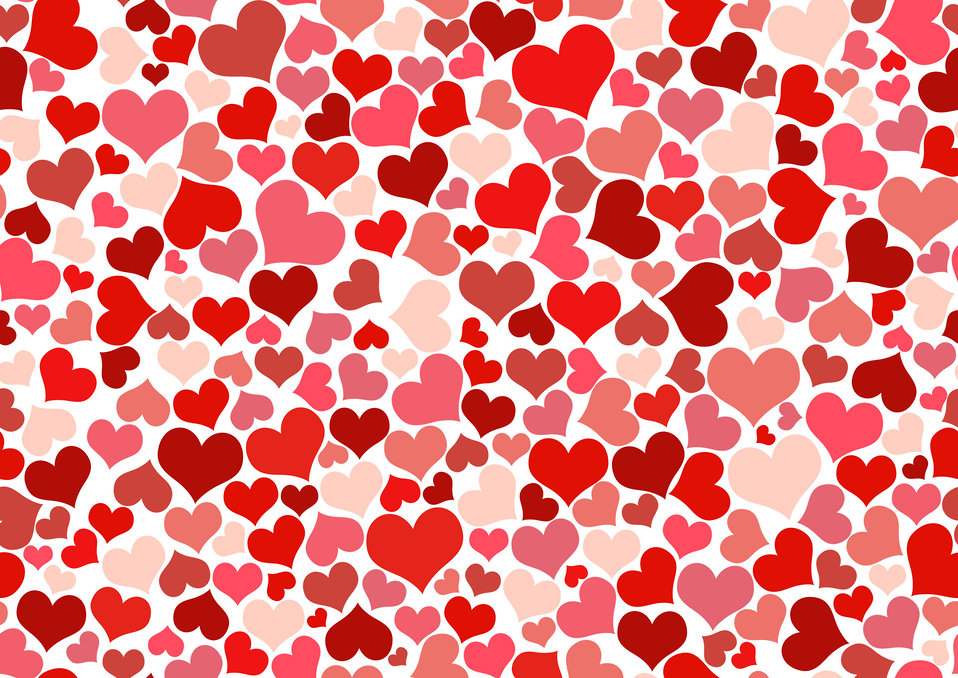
Hearts wallpaper

Seamless heart wallpaper.